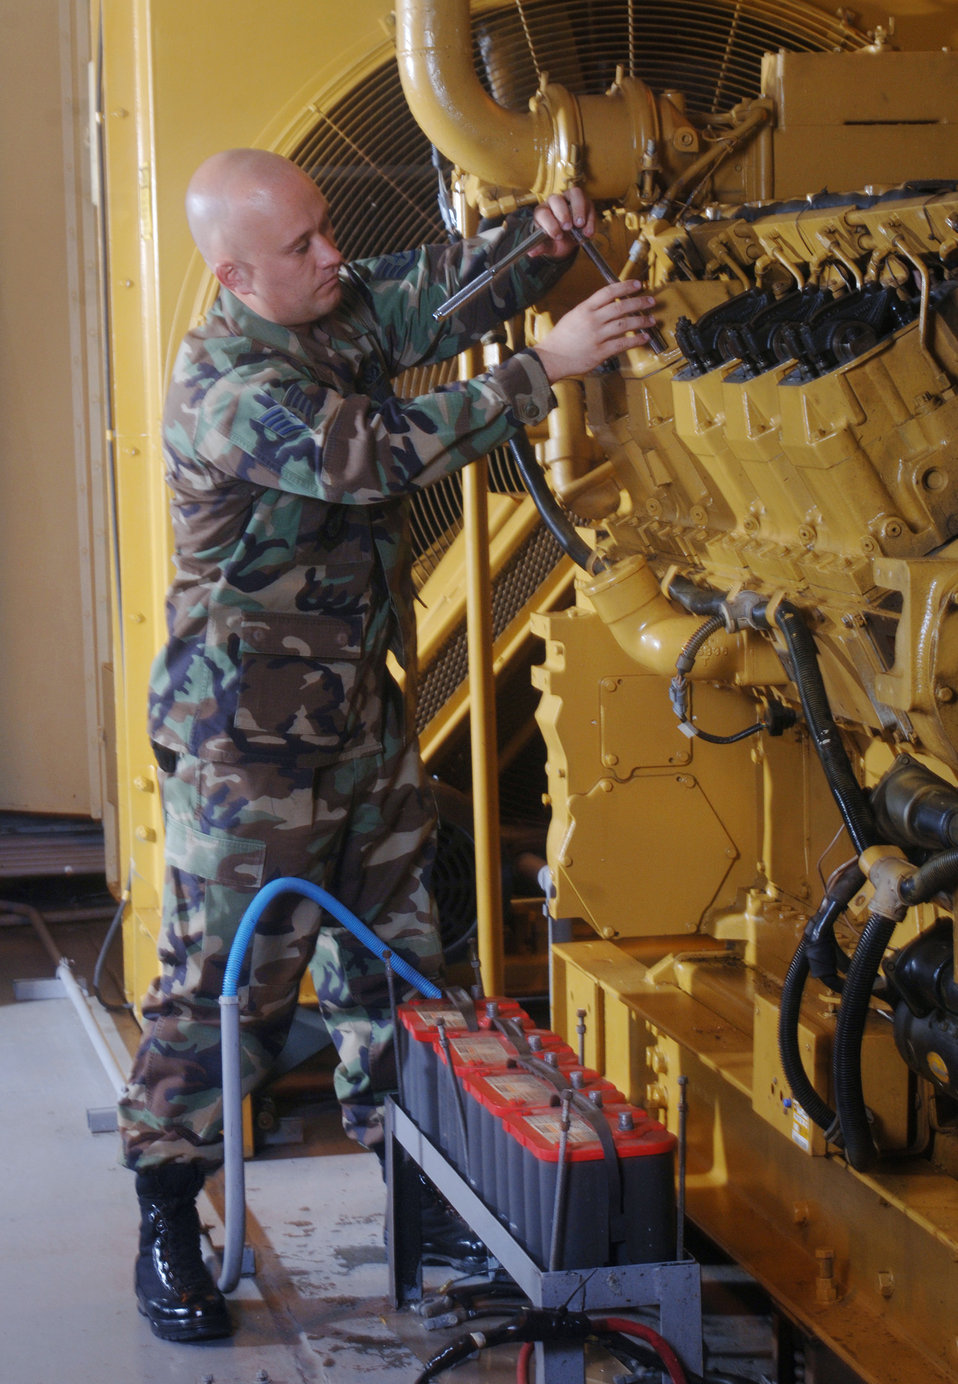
Space security

ANDERSEN AIR FORCE BASE, Guam (AFPN) -- Staff Sgt. Keith Ongley installs a valve cover on a 1,000-megawatt generator during an inspection at his facility here. Sergeant Ongley is an electrical power production craftsman with the 36th Civil Engineer Squadron. The 36th CES Airmen support the Detachment 5, 22nd Space Operations Squadron mission here.